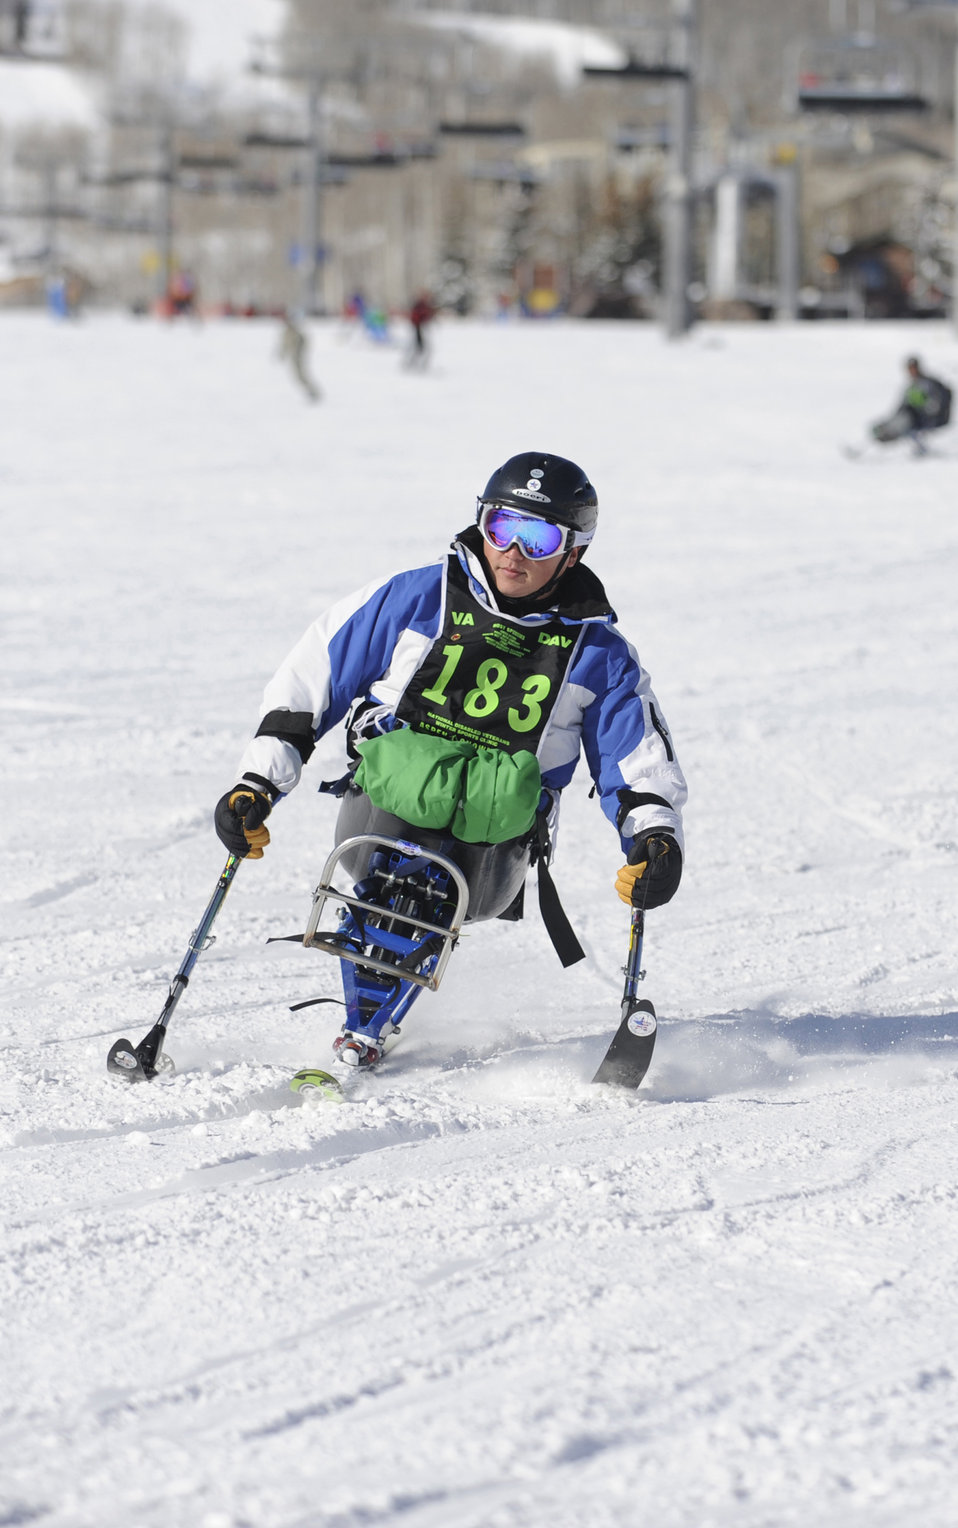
Taking it to the slopes

Senior Airman Kevin Krogh mono-skis April 2, 2009, during the 23rd National Disabled American Veterans Winter Sports Clinic in Snowmass Village, Colo. Airman Krogh lost both legs in a major car accident in 2007 and this is his first year attending the sports clinic. Airman Krogh is assigned to Fort Sam Houston in San Antonio.